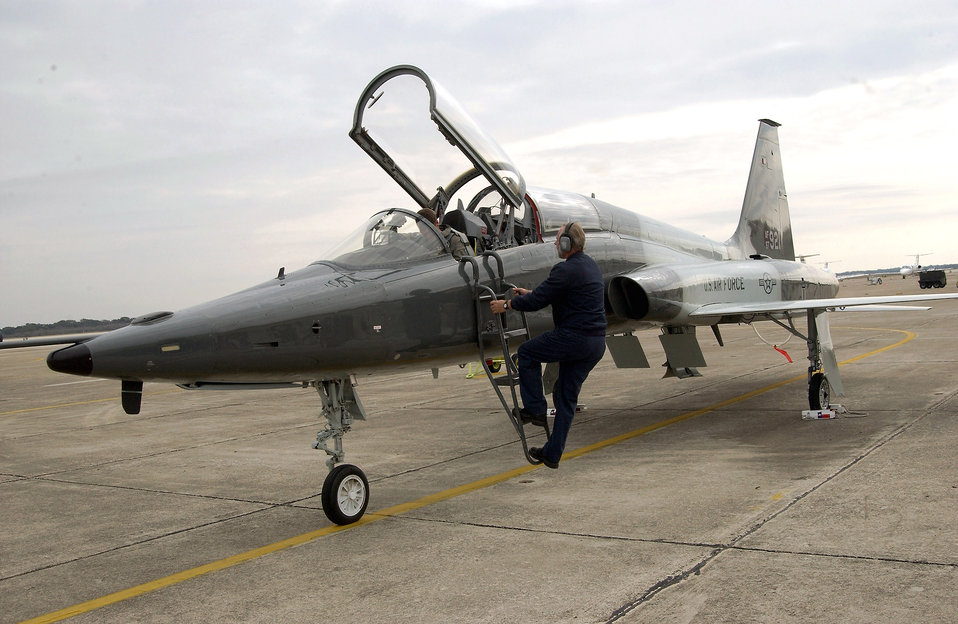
Talons get new aileron levers

T-38 Talons (like the one shown here) are getting new aileron actuator levers. The workload resulted from a crash in which the cause of the mishap was the mechanical failure of the right aileron.